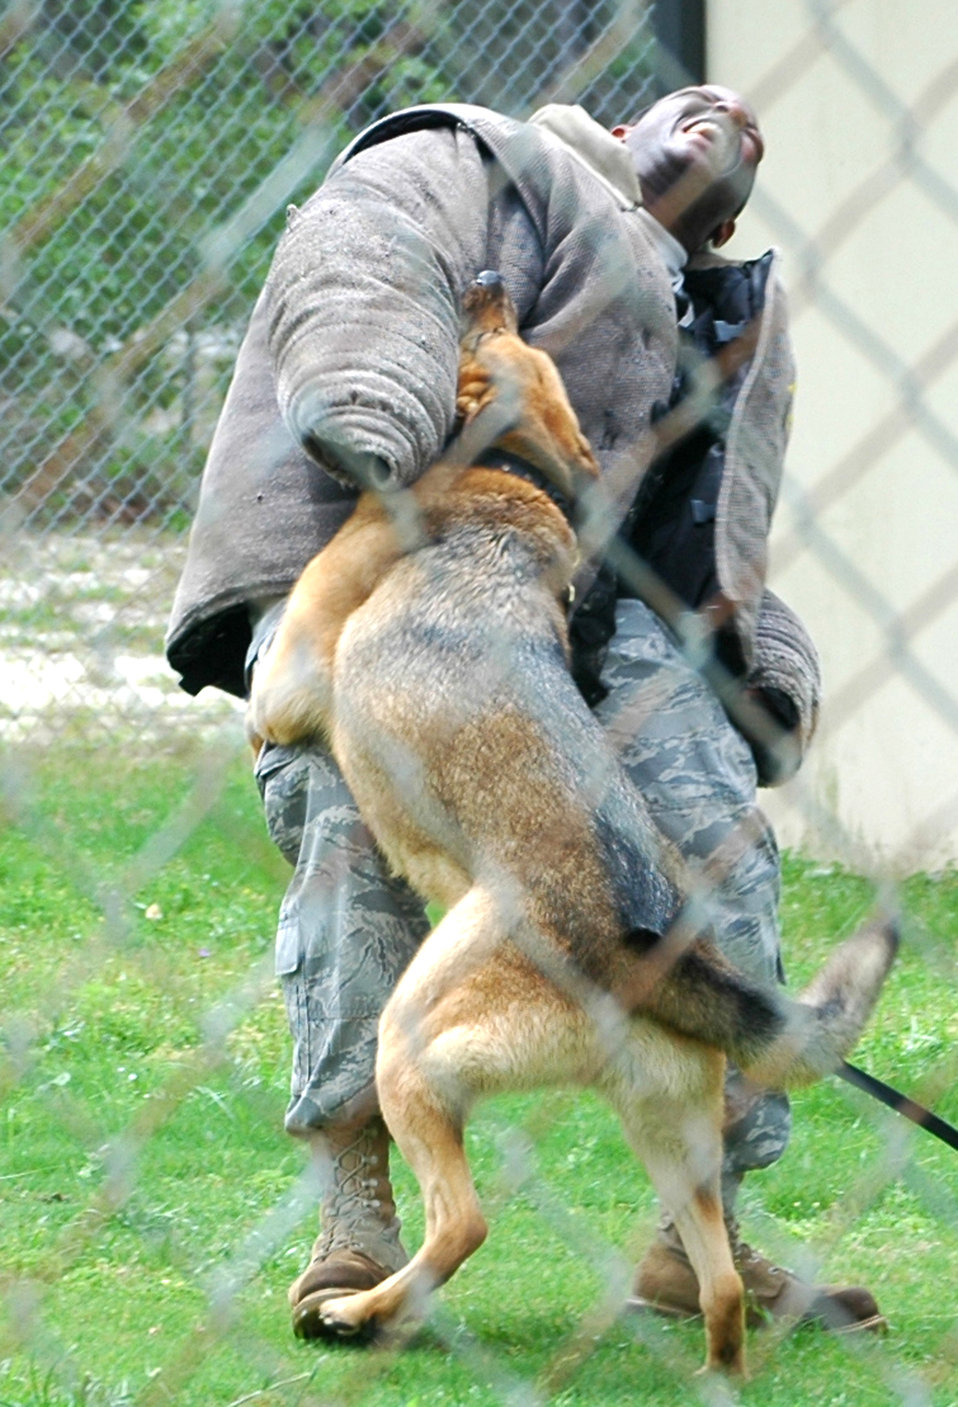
Ouch!

Staff Sgt. Jonathon Winters is